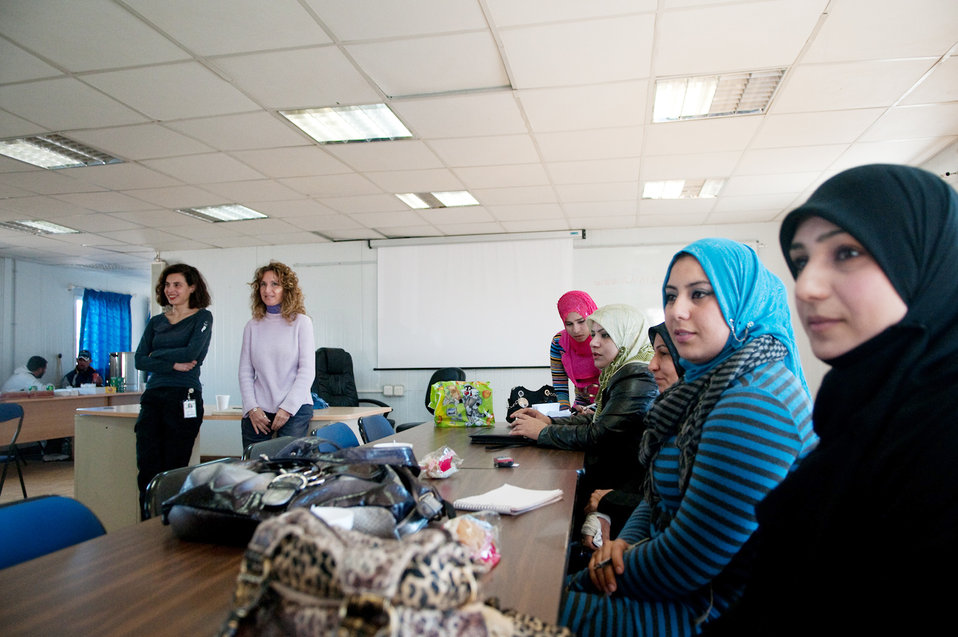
Women journalists from Iraq, U.S., Italy discuss career challenges, successes

Anna Prouse (back right) hosts an Iraqi women journalist conference with Gina Di Meo (back left) to improve the reporting skills of the Iraqi journalists Jan. 23, 2010, at the PRT camp, Mittica, Iraq. Ms. Prouse is the Italian Provincial Reconstruction Team camp leader. Ms. Di Meo is an Italian reporter.